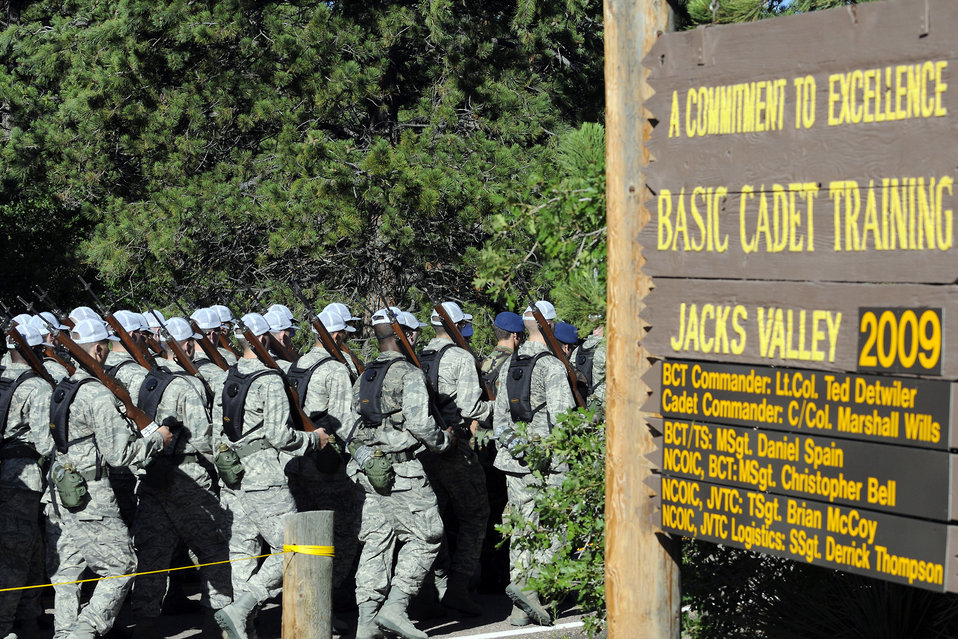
New cadets discover Jacks Valley

More than 1,300 U.S. Air Force Academy basic cadets enter the Jacks Valley training area near Colorado Springs, Colo., July 13 to begin the field training portion of basic training.